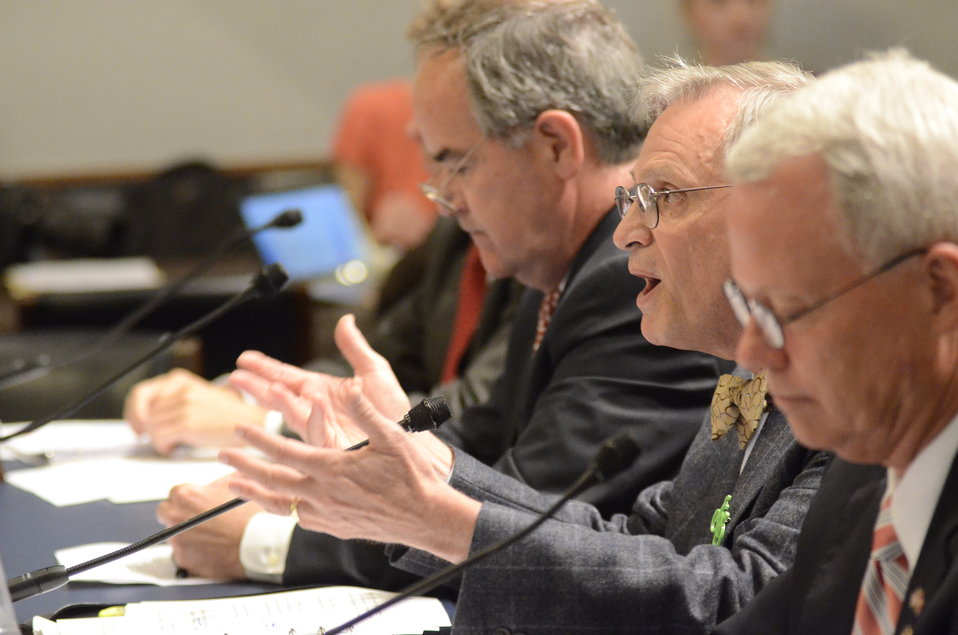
Congressman Earl Blumenauer (OR) testifies on Retailers & Entertainers Lacey Implementation & Enforcement Fairness Act & Freedom from Over-Criminalization & Unjust Seizures Act at the Longworth House Office Building in Washington, D.C., on Tuesday, May 8, 2012.